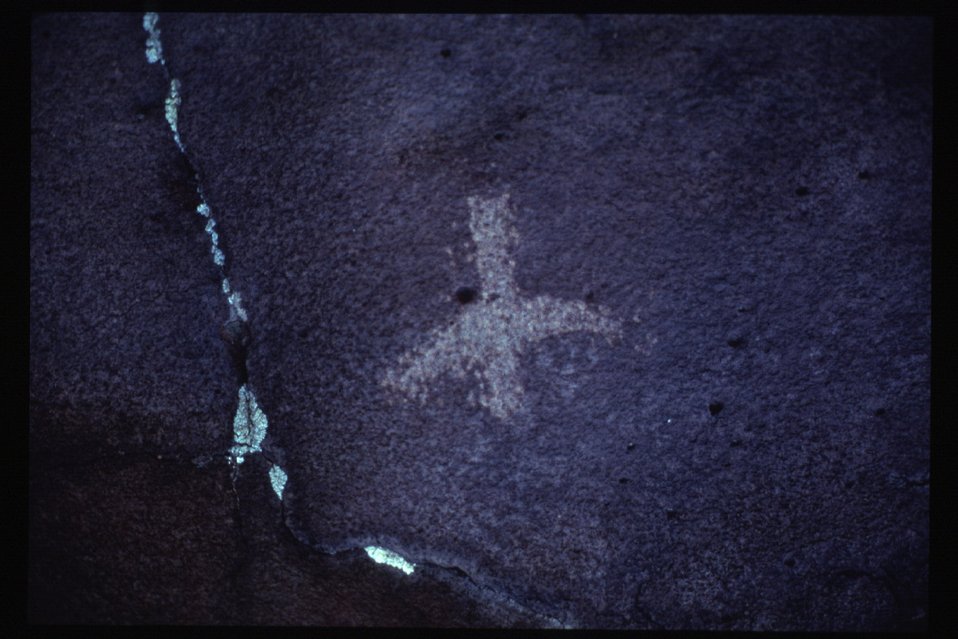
Falcon Petroglyph Birds of Prey National Conservation Area BOP NCA Owyhee Field Office LSRD Lower Snake River District